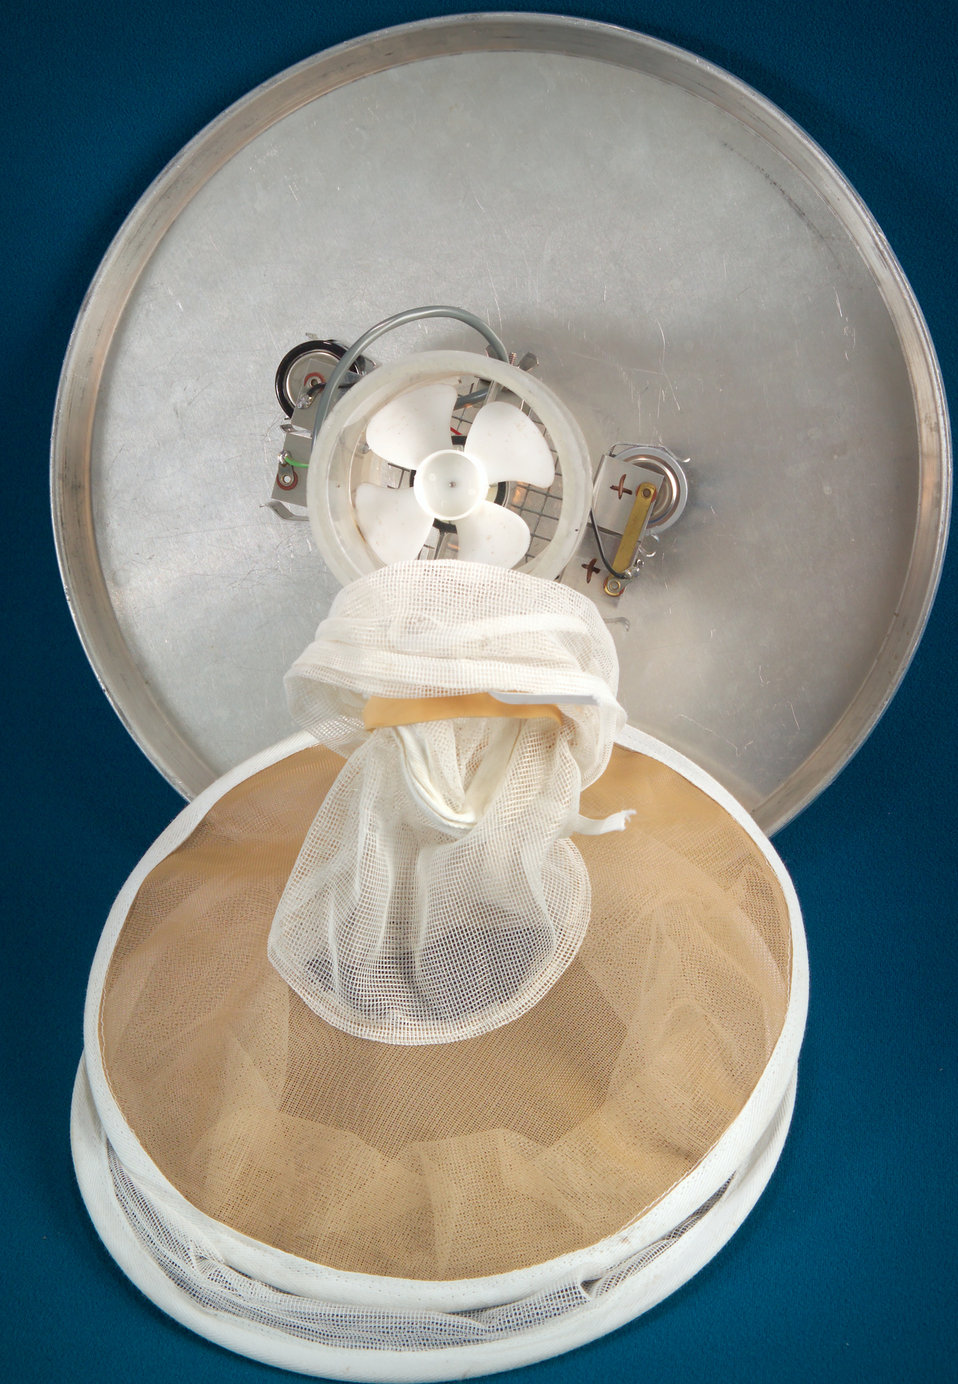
This is a disassembled light trap used to trap mosquitoes tested for the presence of pathogens.